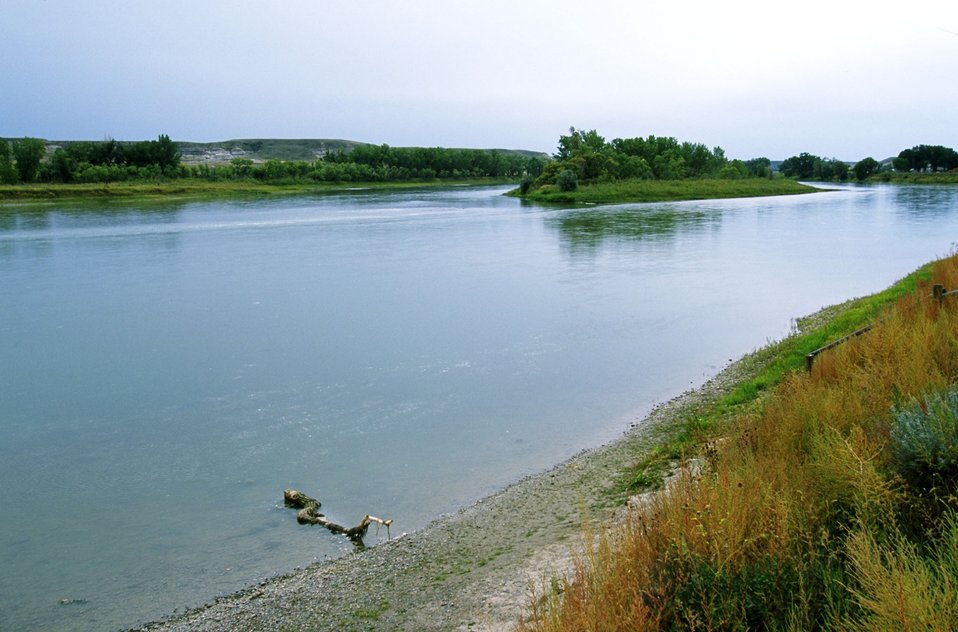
Boat launch at Coal Banks Landing on the Upper Missouri River